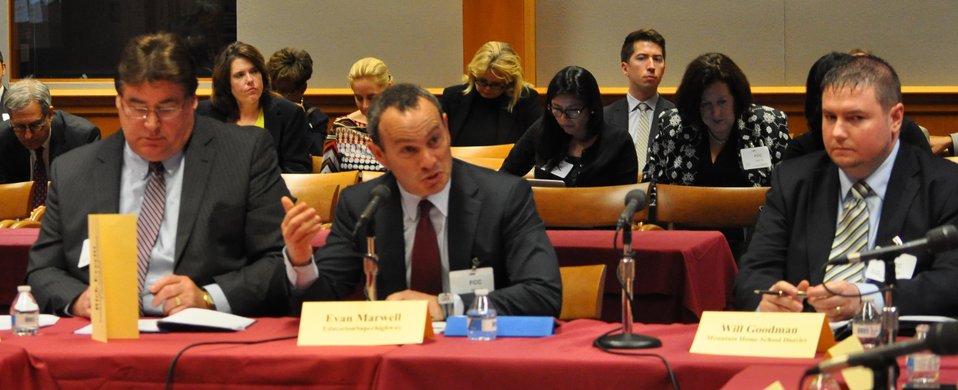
5.6.2014 E-Rate Modernization Workshop

Education and Library Technology Experts Roundtable: Enabling the Lowest “E-rate” for Schools and Libraries